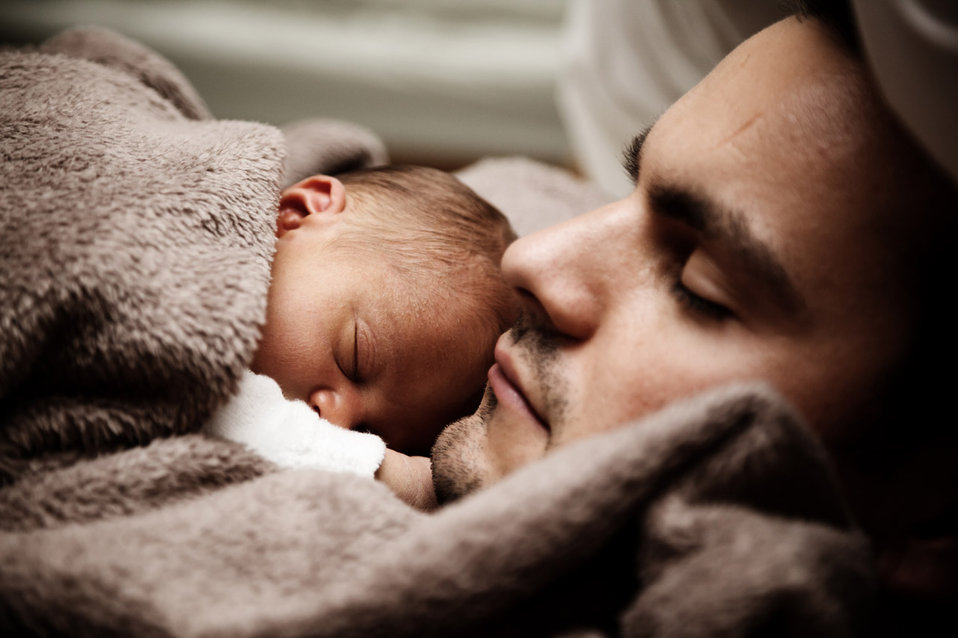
Baby and dad sleeping

Newborn baby and daddy sleeping.